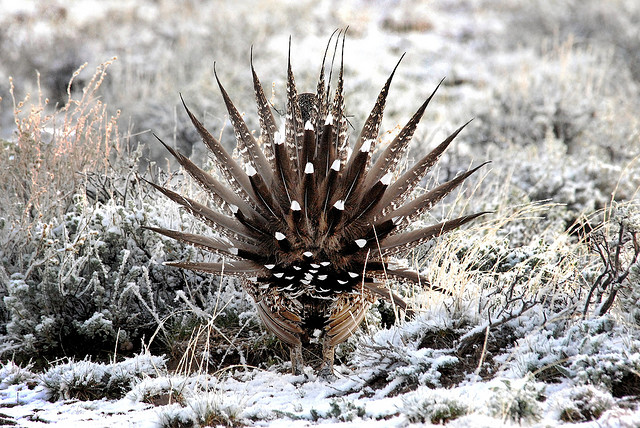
greater sage grouse

Malheur National Wildlife Refuge, OR